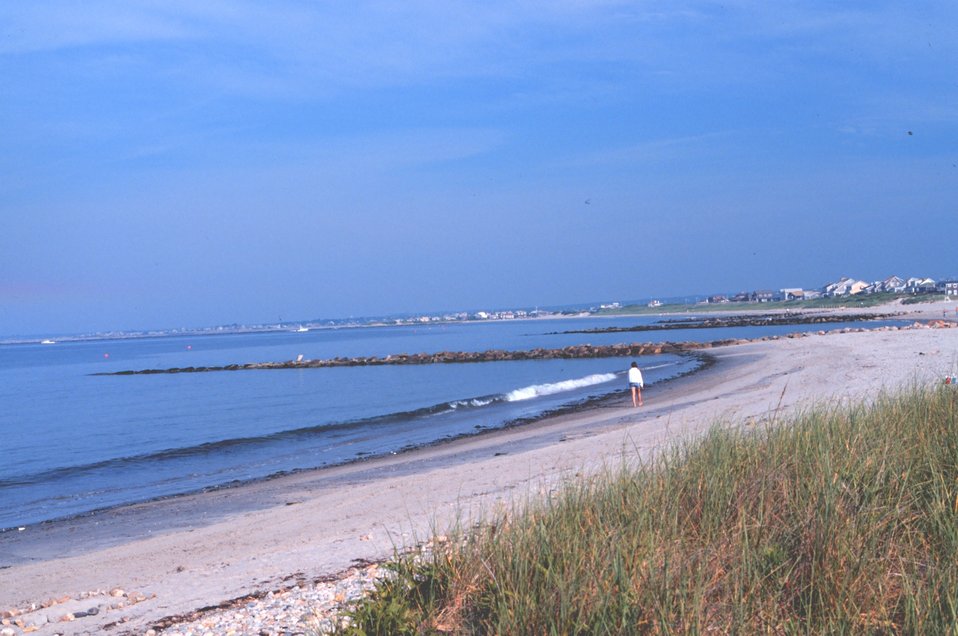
Beach and seagrass near the port of Galilee